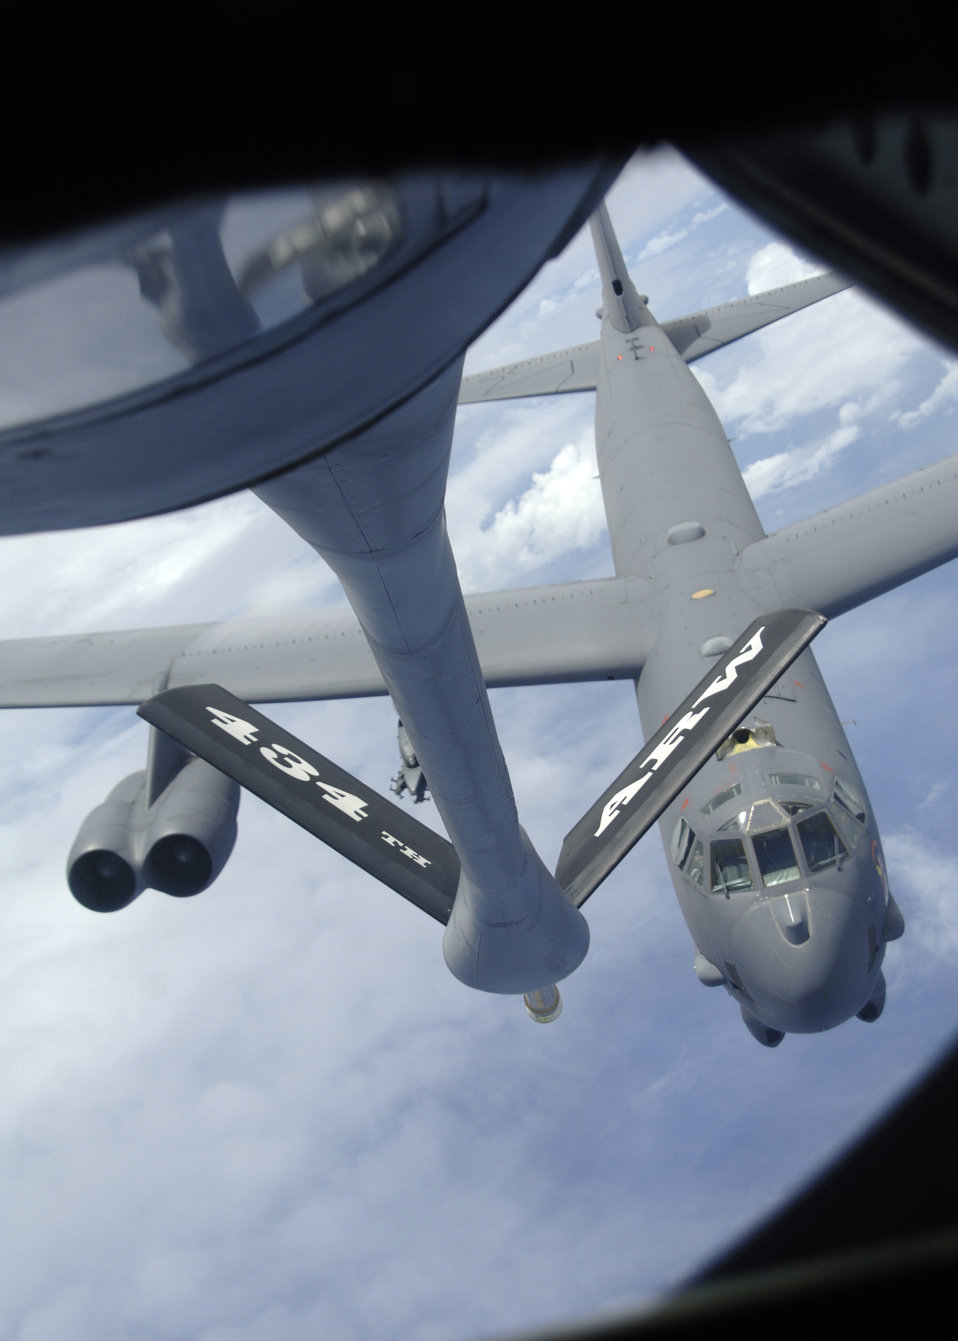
B-52s maintain global reach

A B-52 from the 23rd Expeditionary Bomb Squadron stabilizes in pre-contact position during a recent air refueling mission near Andersen Air Force Base, Guam. More than 90,000 pounds of fuel can be delivered via air refueling – a critical component in maintaining the ‘Global Reach’ of the heavy bomber force deployed to the Pacific region.